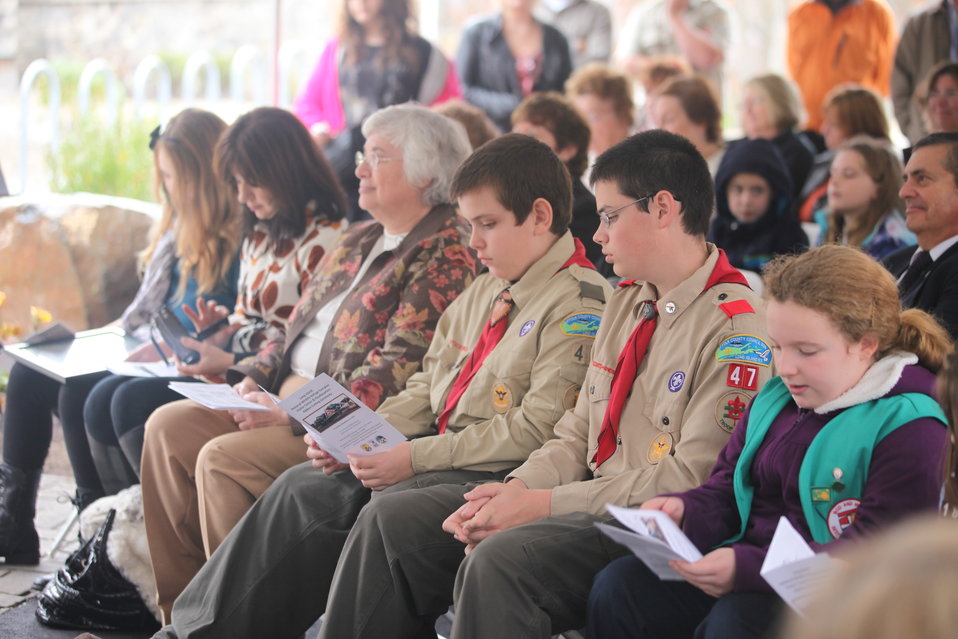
Boy & Girl Scout Troop members at opening ceremony

Local Boy Scout Troop 47 & Suffolk County Girl Scouts volunteered to help hand-out programs and lead the Pledge of Allegiance.